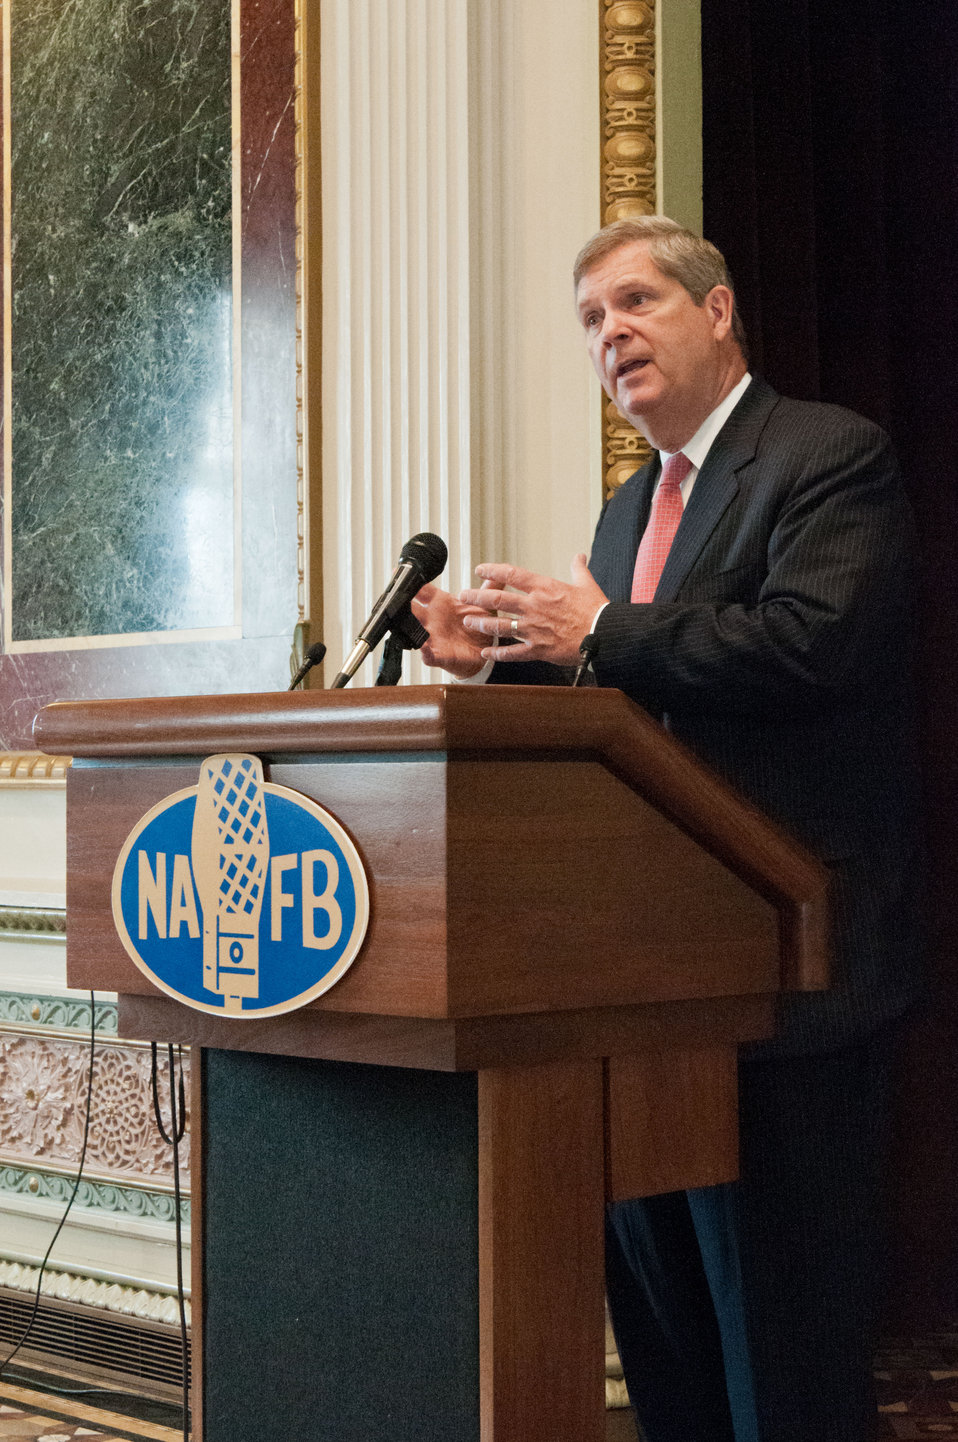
Agriculture Secretary Tom Vilsack discussed the strength of the rural economy at the spring National Association of Farm Broadcasters (NAFB), “Washington Watch” member retreat in Washington, D.C. This year the meeting was held in the Eisenhower Executive Office Building, Indian Treaty Room Tuesday, April 24, 2012 featuring United Sates Department of Agriculture and Obama Administration officials. This opportunity provides an occasion to highlight efforts to rebuild and revitalize rural America, including efforts for the agricultural community. NAFB is the recognized and trusted source of agricultural and rural lifestyle information for America with approximately 200 members who broadcast via radio in nearly every state in the country.